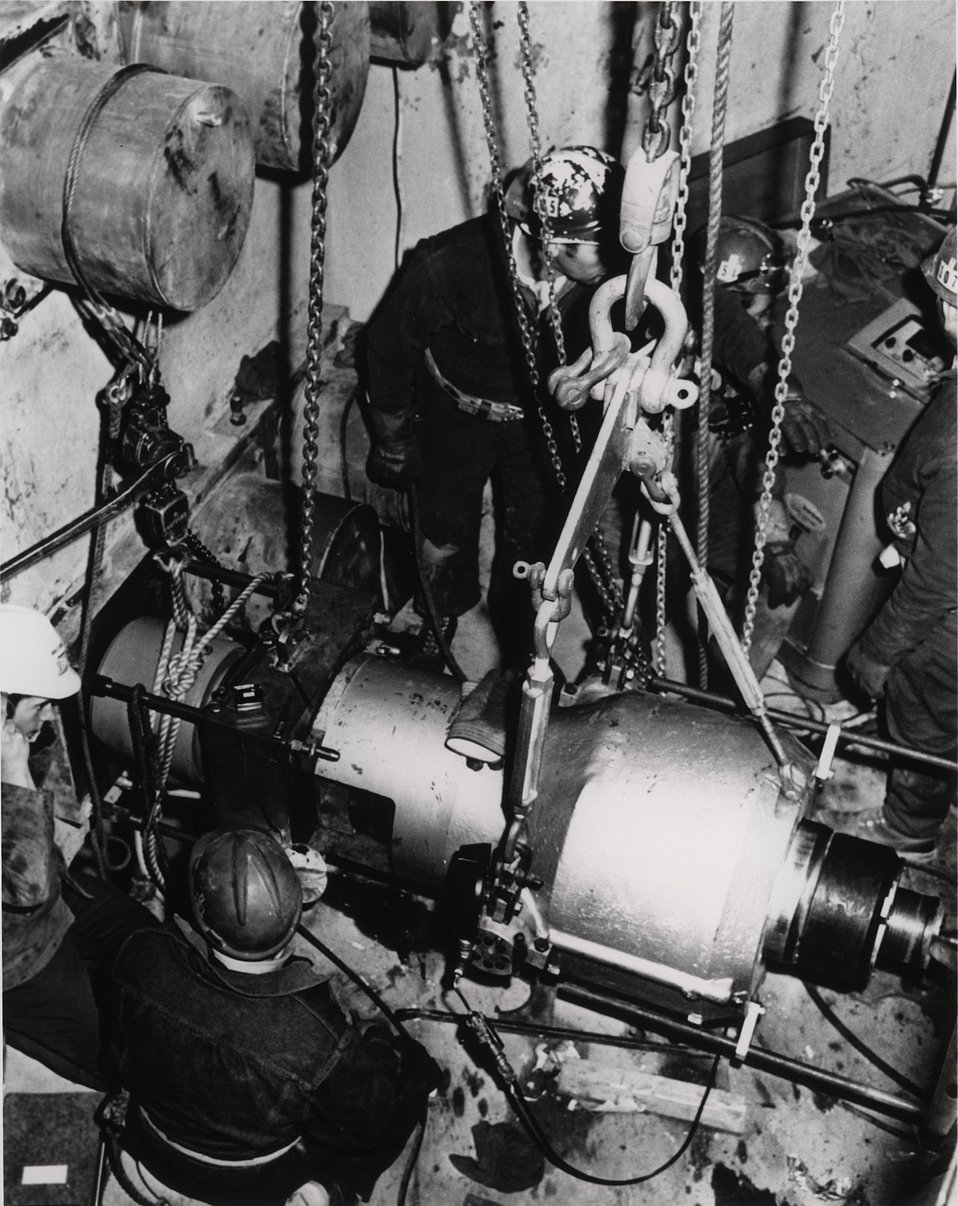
Stressing one of the 90 vertical tendons surrounding the Fort St. Vrain prestressed concrete reactor vessel.